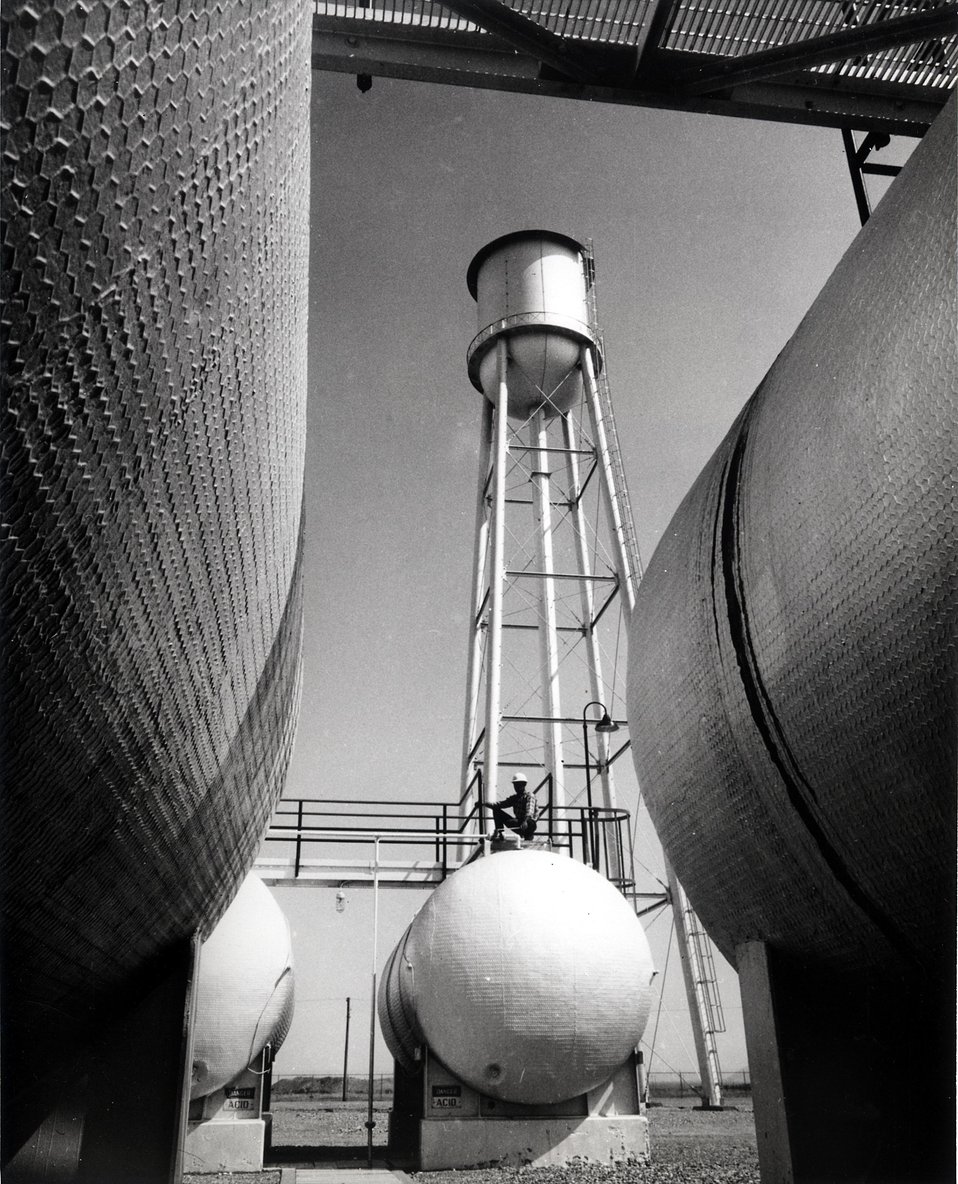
Water tower in the Test Reactor Area at the U.S. Atomic Energy Commission's National Reactor Testing Station in Idaho. Circa 1974.